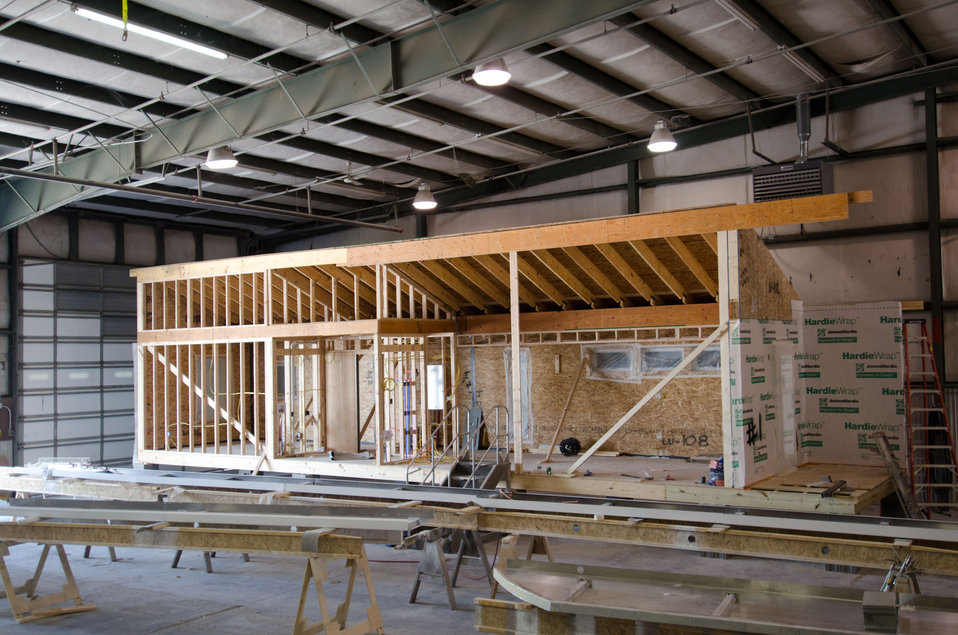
Stardust Industries is helping retool and redirect Kentucky’s houseboat manufacturing industry – which has been decimated because of the struggling economy – by using its facilities and manpower to create low-cost housing that is energy efficient. Rural Development obligated $499,000 in Rural Business Enterprise Grant funds to support this unique endeavor. Up until a few years ago, there were several successful houseboat manufacturers in the four-county area surrounding the city of Somerset. Most have now ceased operation or drastically reduced output, which has led to dramatic, long-term job loss. These new energy efficient homes will be constructed in redesigned, refitted houseboat factories using local workers that have been retrained.